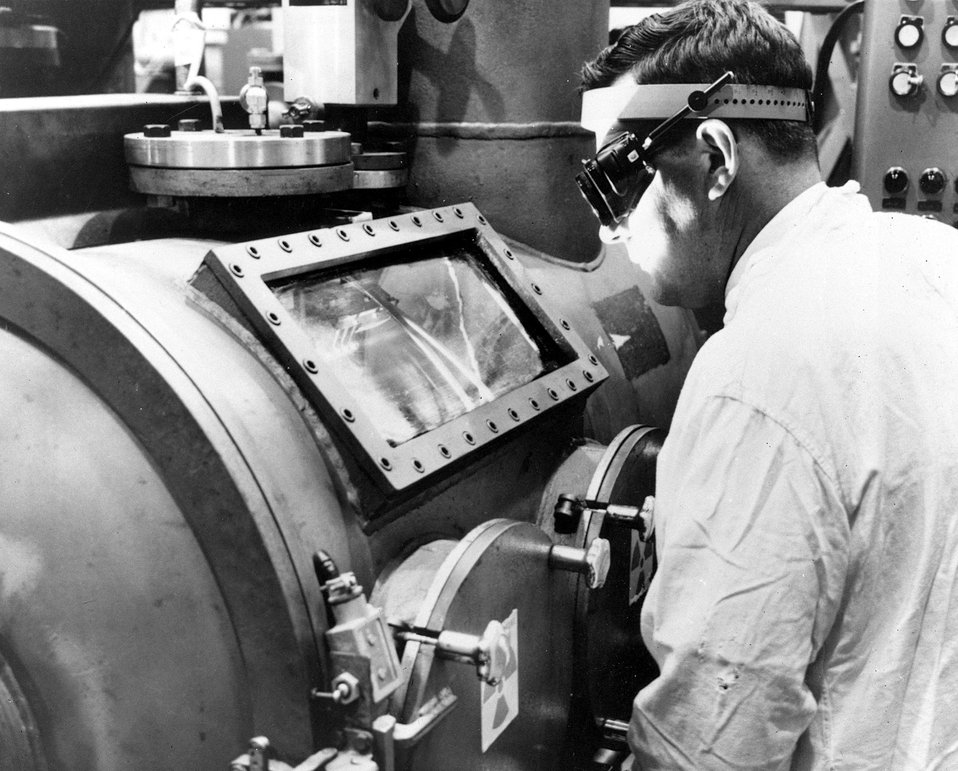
Richland, Washington...Electron beam welding, developed primarily for fabricating nuclear fuel elements, has been adapted for use in all areas of industrial welding. c. 1966